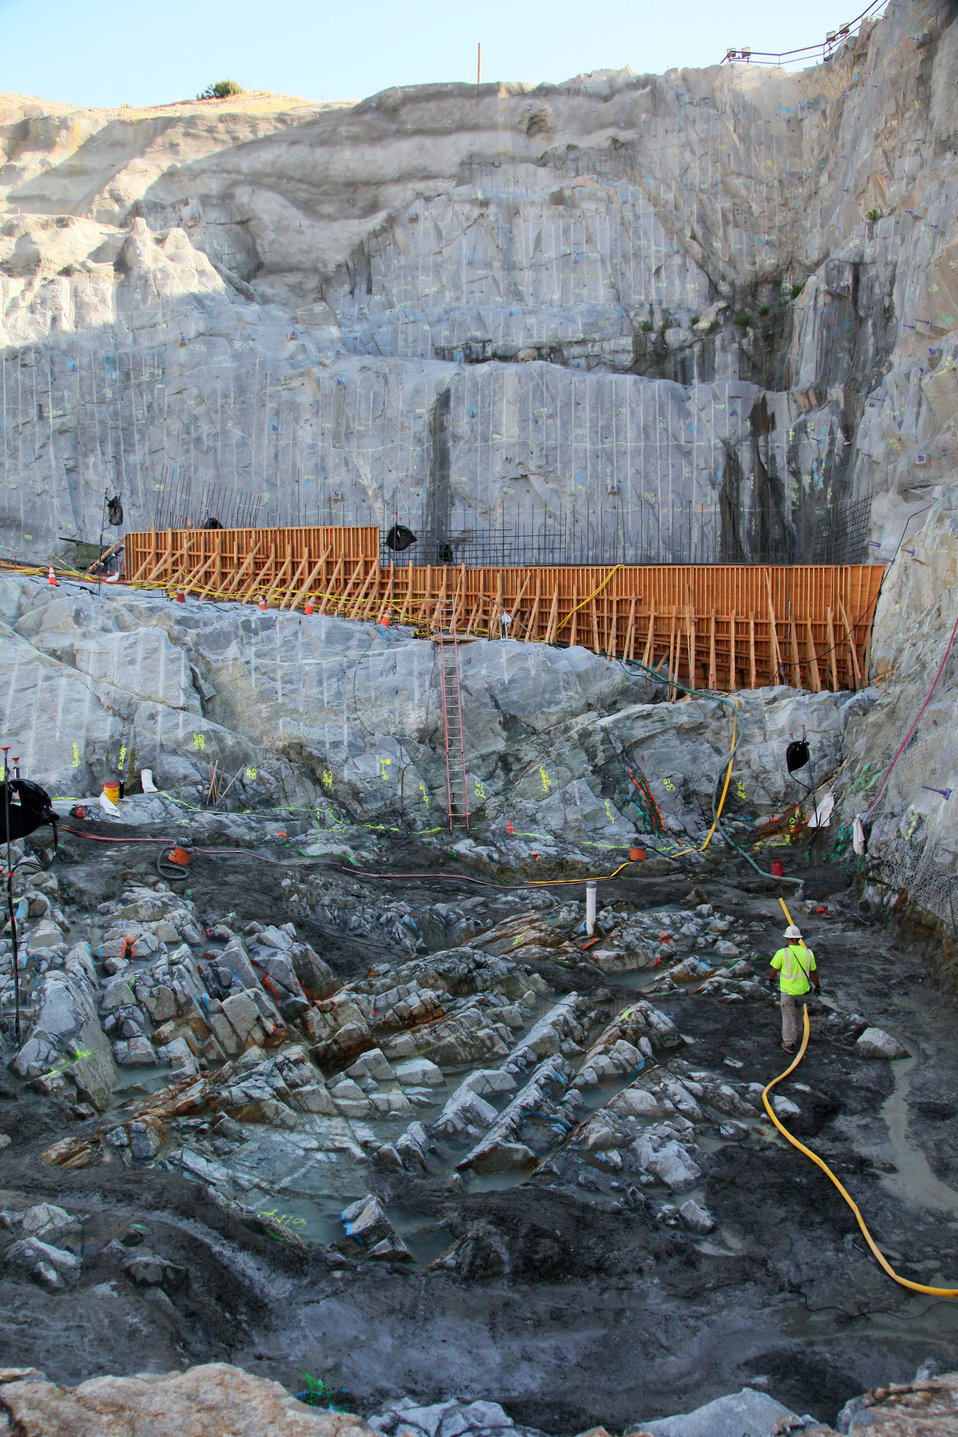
Preparations for concrete placement at the Folsom auxiliary spillway

Contractors for the U.S. Army Corps of Engineers Sacramento District fill in cracks (lower half of image) in preparation for concrete placement for the auxiliary spillway control structure at the Folsom Dam in Folsom, Calif., May 30, 2012. Cracks in the rock were filled with a slurry mix called dental mortar. The spillway project is part of the Folsom Dam Joint Federal Project, a joint effort of the Corps, U. S. Bureau of Reclamation, the Central Valley Flood Protection Board and the Sacramento Area Flood Control Agency to improve the safety of the current dam and reduce flood risk for the greater Sacramento area.